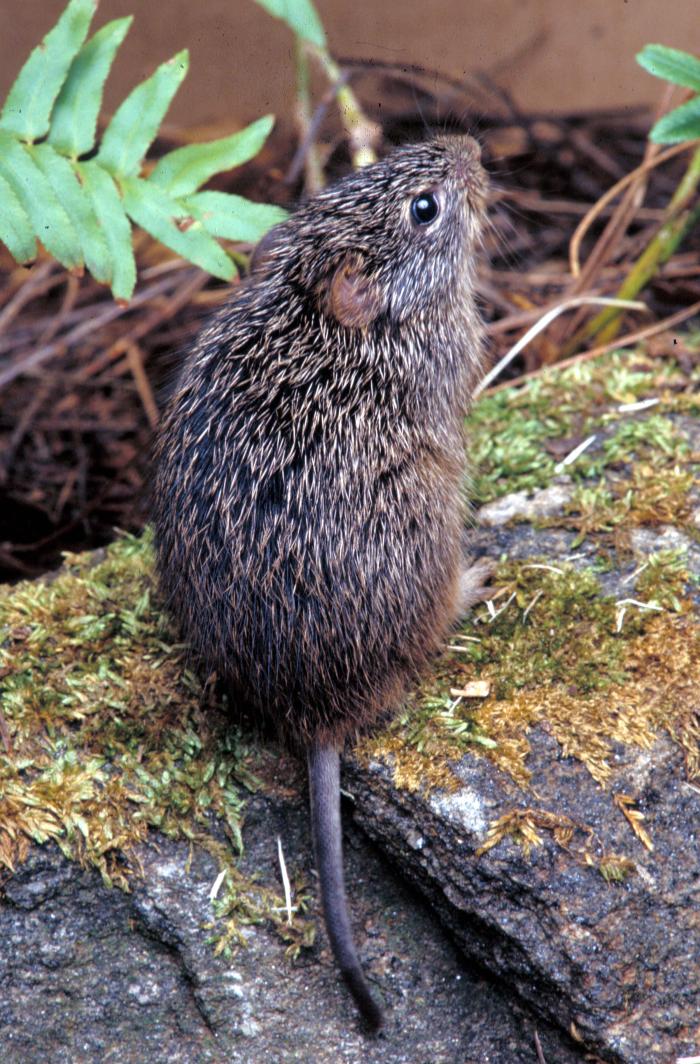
This photograph depicted a cotton rat, Sigmodon hispidus, whose habitat includes the southeastern United States, and way down into Central and South America. Its body is larger than the deer mouse, Peromyscus maniculatus, and measures about 5 - 7 inches, which includes the head and body; the tail measures an additional 3 - 4 inches. Its hair is longer and coarser than P. maniculatus, and is a grayish-brown color, sometimes grayish-black. The cotton rat prefers overgrown areas with shrubs and tall grasses.The cotton rat is a hantavirus carrier that becomes a threat when it enters human habitation in rural and suburban areas. Hantavirus pulmonary syndrome (HPS) is a deadly disease transmitted by infected rodents through urine, droppings, or saliva. Humans can contract the disease when they breathe in aerosolized virus.